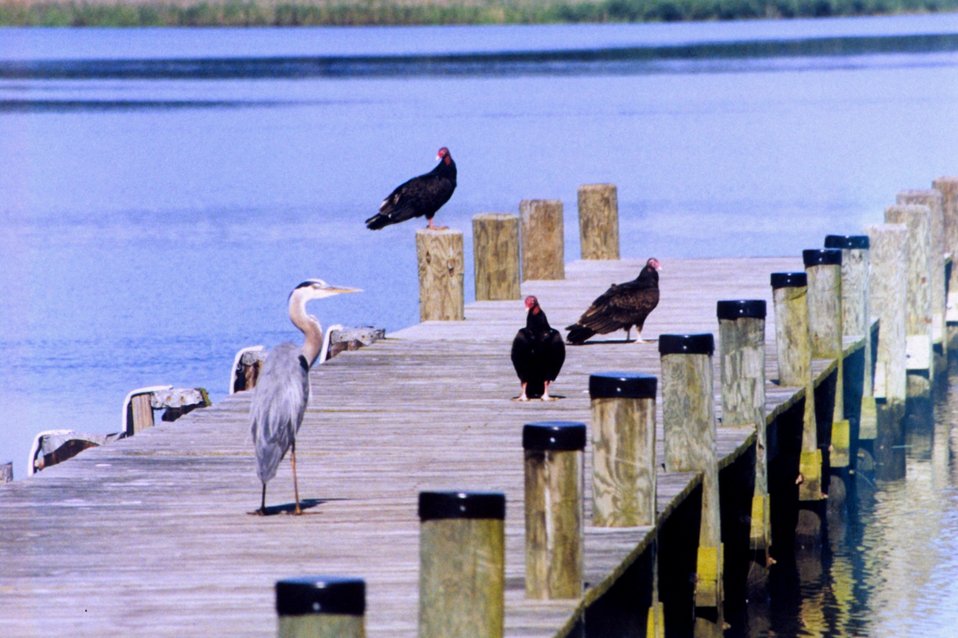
A Great Blue Heron and Turkey Vultures sharing a Patuxent River pier.